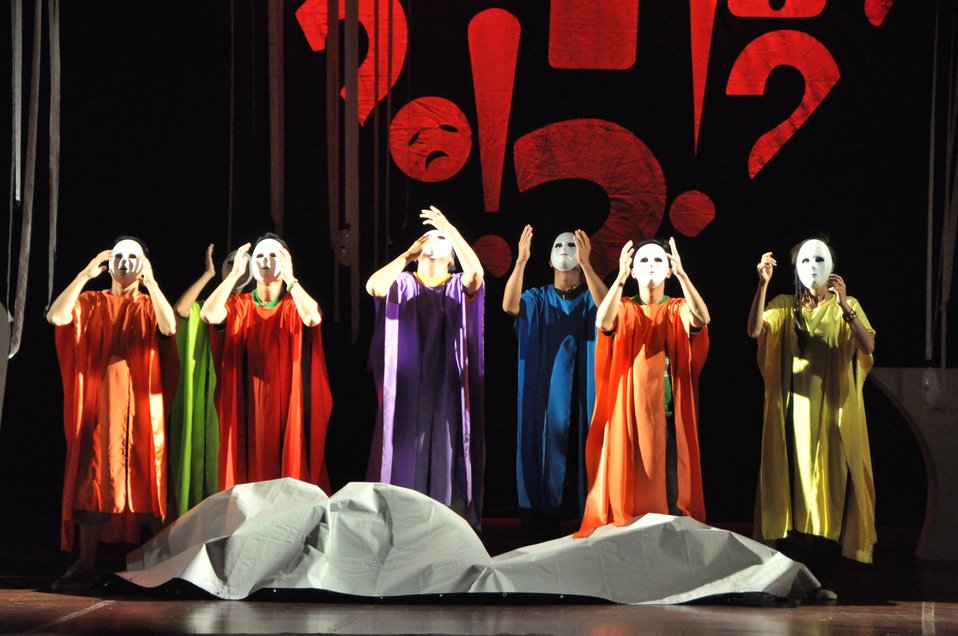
PEPFAR Musical Questions and Exclamations

Hanoi, May 17, 2013